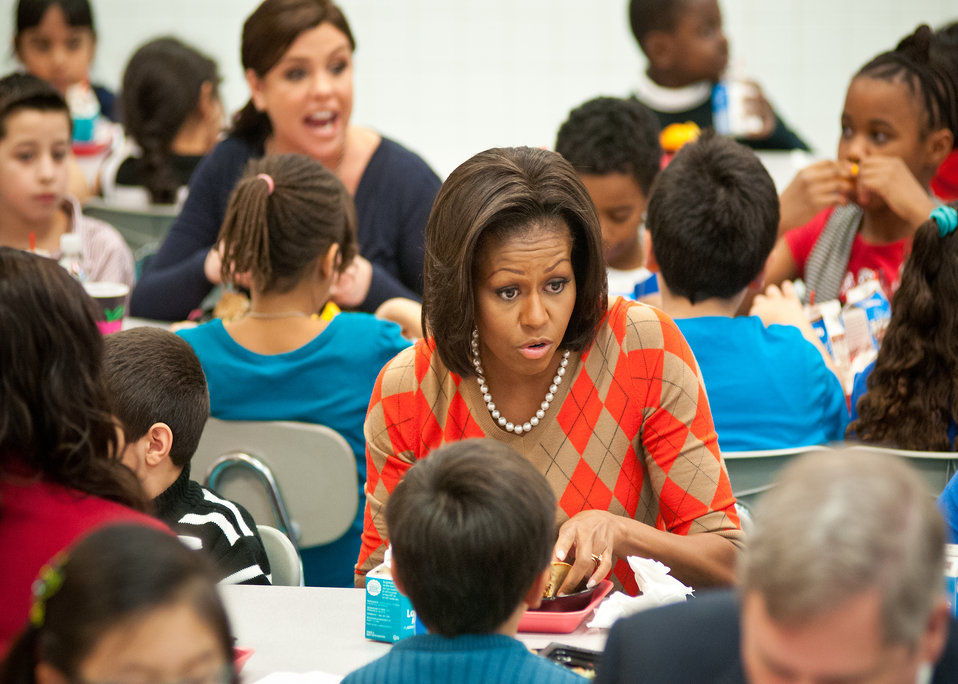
First Lady Michelle Obama joined Agriculture Secretary Tom Vilsack and celebrity cook Rachel Ray at Parklawn Elementary School in Alexandria, Virginia, on Wednesday, January 25, 2012 to speak with faculty and parents about the United States Department of Agriculture’s new and improved nutrition standards for school lunches. An important accomplishment of the Healthy, Hunger-Free Kids Act that President Obama signed into law last year, USDA is making the first major changes in school meals in over 15 years. The new standards encourage fruits and vegetables every day of the week, increasing offerings of whole grain-rich foods, offering only fat-free or low-fat milk and making sure kids are getting proper portion sizes.